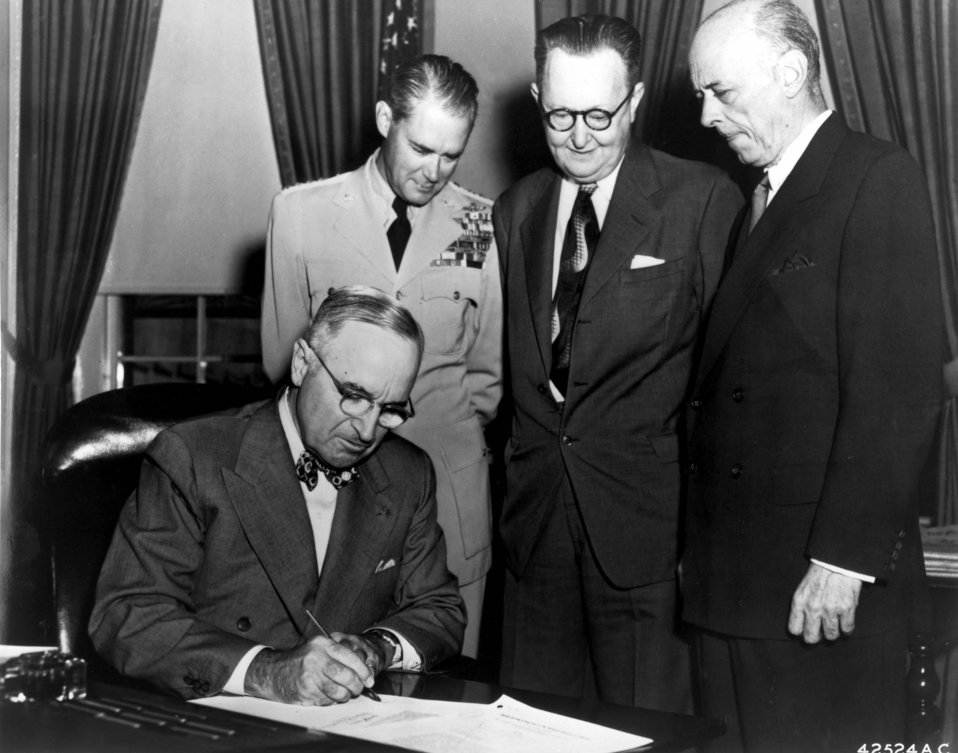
Truman makes Air Force Department official

1950's -- President Truman signs HR1726, an act